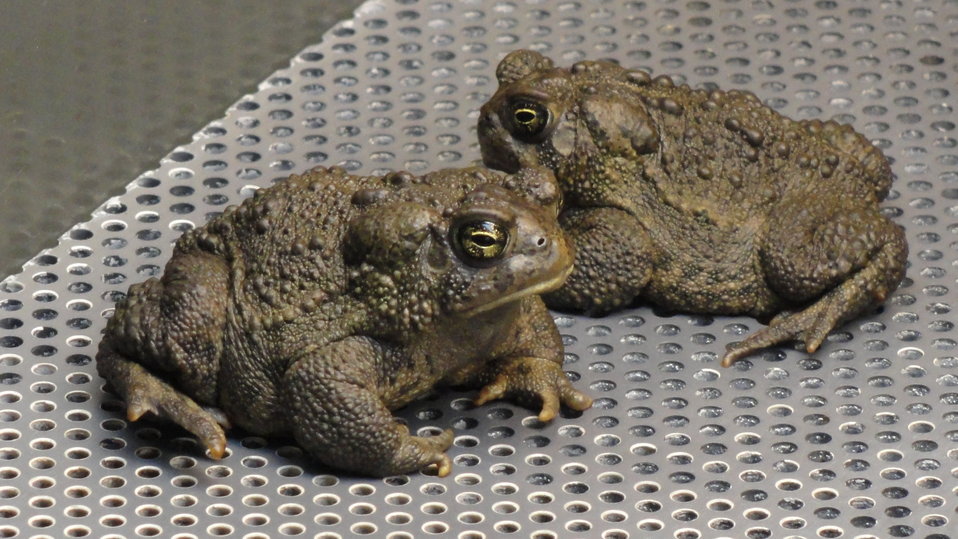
Visiting Saratoga National Fish Hatchery

In April of 2014, regional office employees visited Saratoga National Fish Hatchery to learn more about its efforts towards recovering the Wyoming toad (Bufo baxteri).

The hatchery adopted a unique role in becoming the first unit in the National Fish Hatchery System to become involved in rearing endangered amphibians. The Wyoming toad was a common sight on areas of the Laramie Plains, Albany County, Wyoming, into the early 1970s but the species' populations crashed in the mid-1970s. The Wyoming toad was listed as endangered by the U.S. Fish & Wildlife Service in January 1984. Found only in southwestern Wyoming, the Wyoming toad is considered the most endangered amphibian in North America. The hatchery maintains a captive population for breeding, rearing, and refugia, and the offspring from this program will be used for reintroduction efforts.